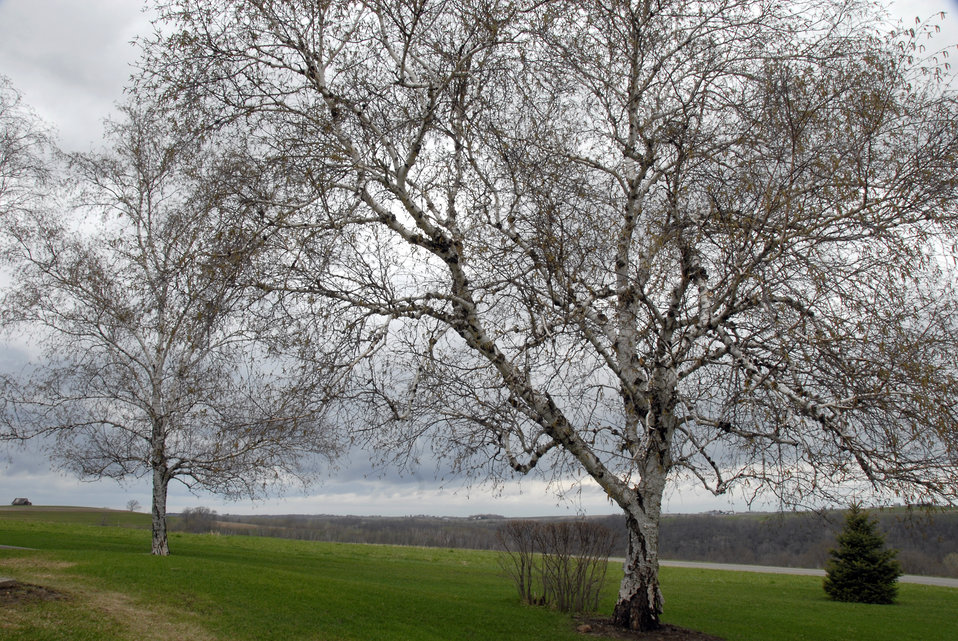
Birch trees sit on small rise on a farm in La Crosse, Wisconsin on April 25, 2008. The U.S. Department of Agriculture’s (USDA) Natural Resource Conservation Service (NRCS) has various programs to assist farmers and ranchers in implementing and maintaining conservation practices that will enable them to have more sustainable and profitable farms and ranches.